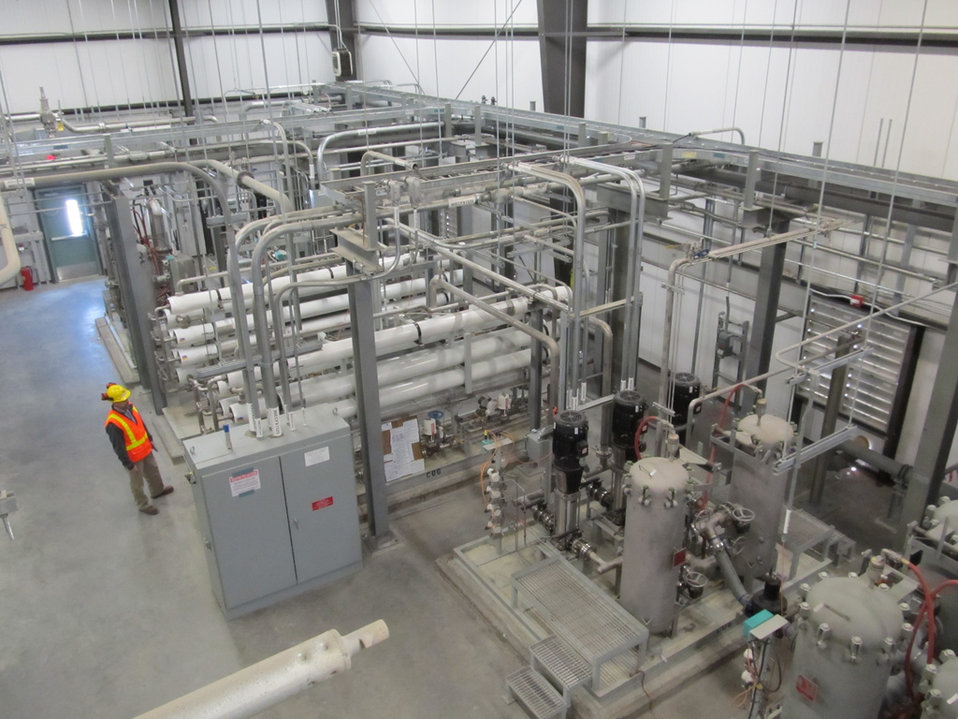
Shown is Hanford Waste Treatment Plant.

Crews at the Hanford Waste Treatment Plant, also known as the Vit Plant, completed construction of an essential support building. The Building houses equipment that will filter and treat water that will be used throughout Vit Plant Facilities during operations.